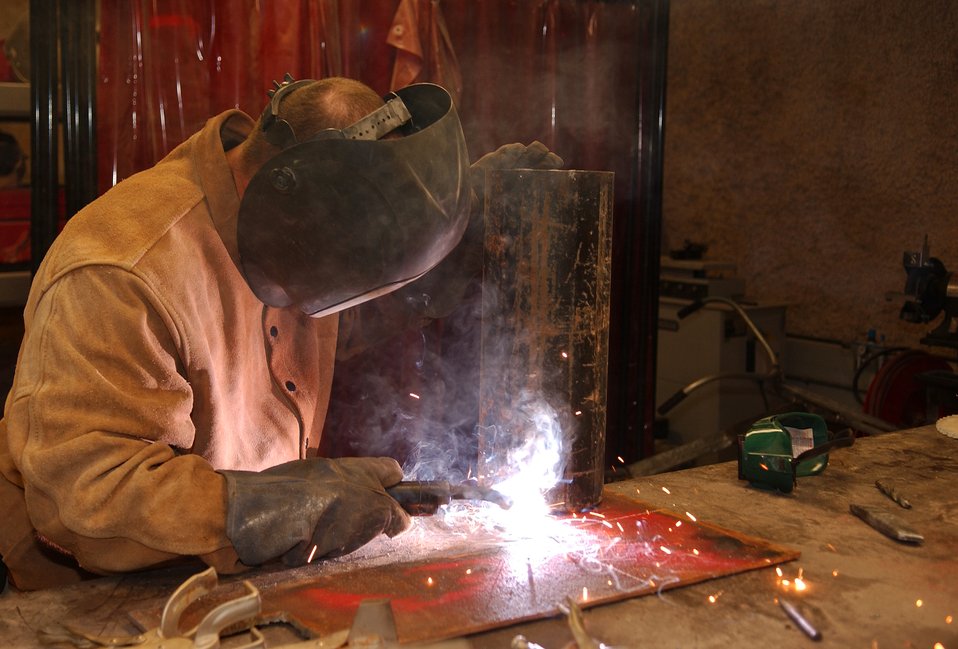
All fired up

SOUTHWEST ASIA -- Senior Airman Ralph Keener is one of several welders at a forward-deployed location providing vital support to Operation Iraqi Freedom. He is assigned to the 1st Expeditionary Red Horse Group.